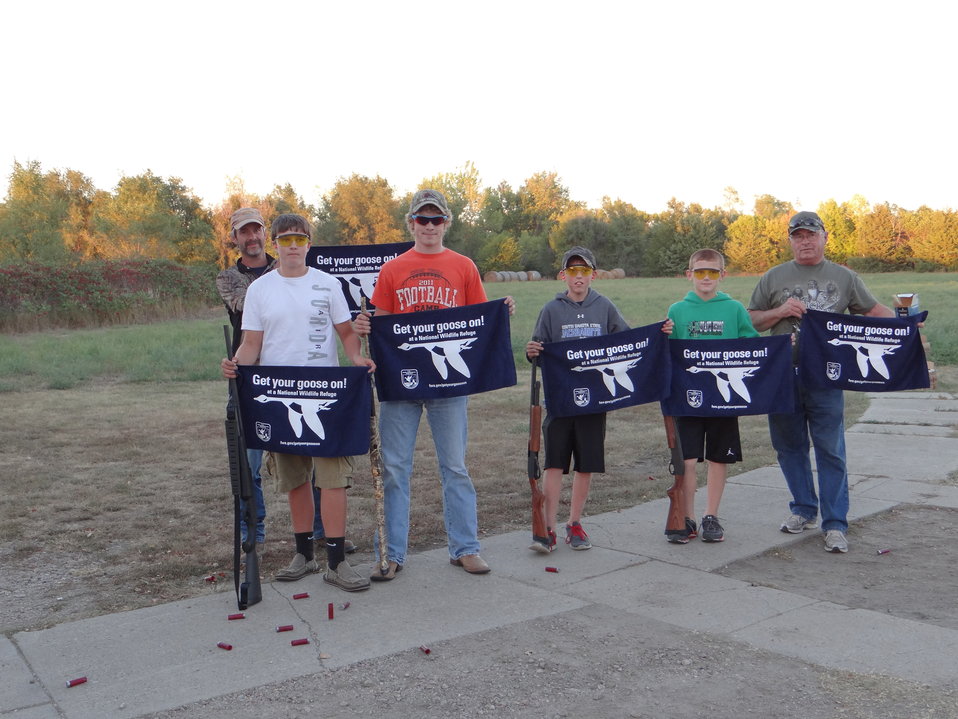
Get Your Goose On!

2013 Huron WMD Youth Waterfowl Hunt. Preparing for the hunt at the trap range in Huron SD. The Huron Wetland Management District hosted its 10th annual Youth Waterfowl Hunt in September. This event provided 28 youth hunters between the ages of 12 – 15 and (new) mentored hunters (10-11), an opportunity to learn about various migratory birds and their habitats, duck and goose calling, decoys, and waterfowl hunting techniques. This event continues to be a success each year due to the dedicated volunteers within the community of Huron.